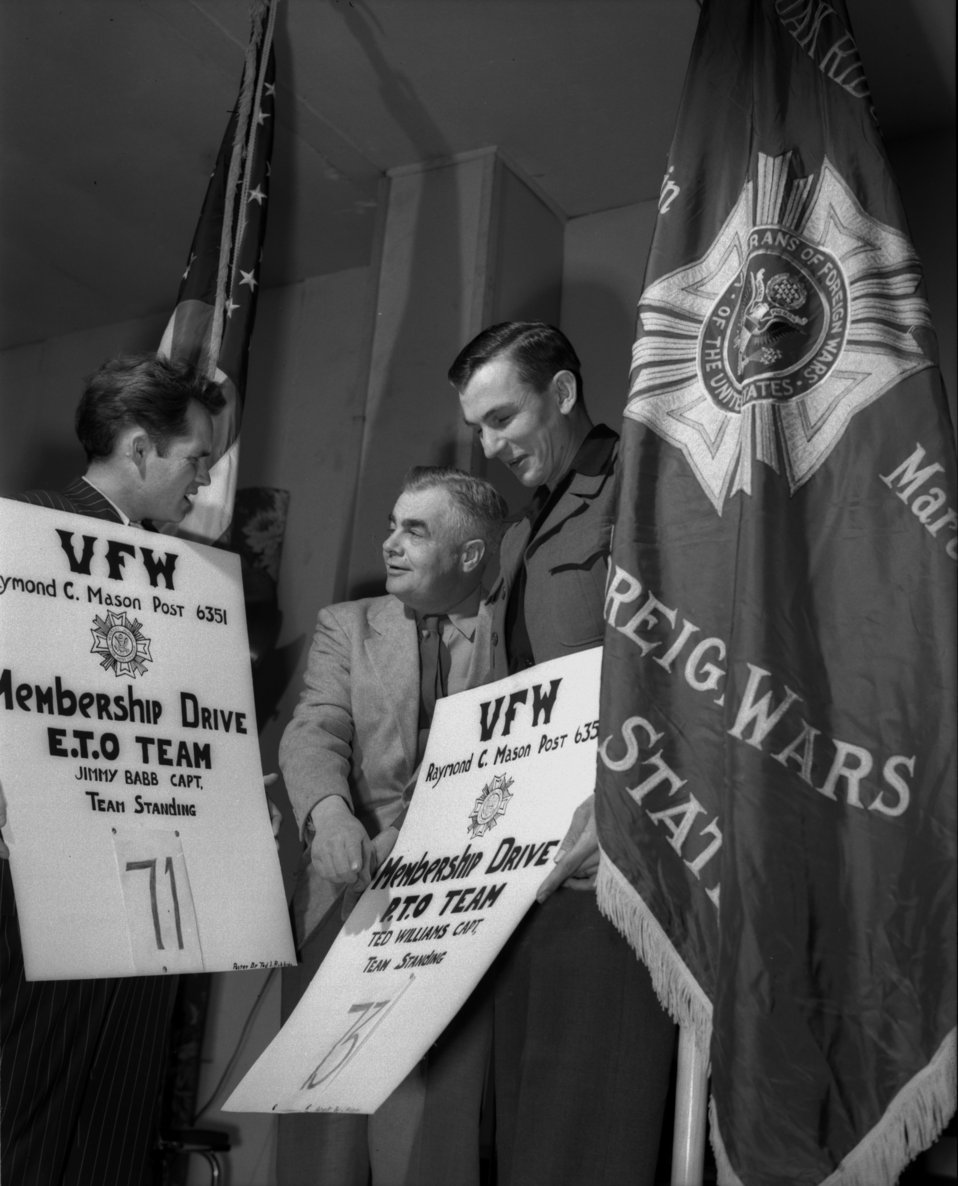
V.F.W. Membership Drive

004153-3 DOE photo by Ed Westcott

Oak Ridge Tennessee 12-18-1947